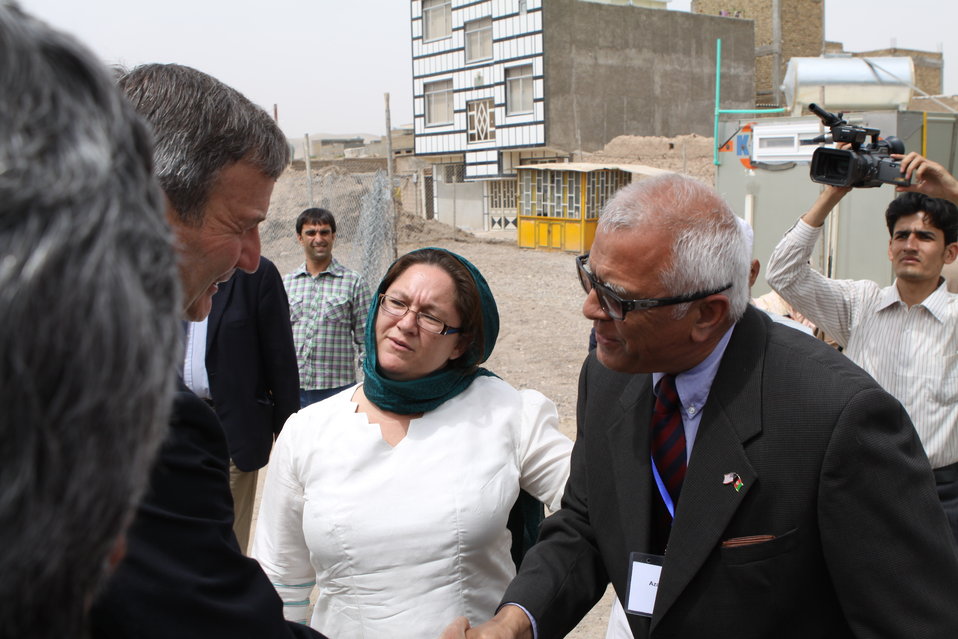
100525 Hirat Marble Conference 599